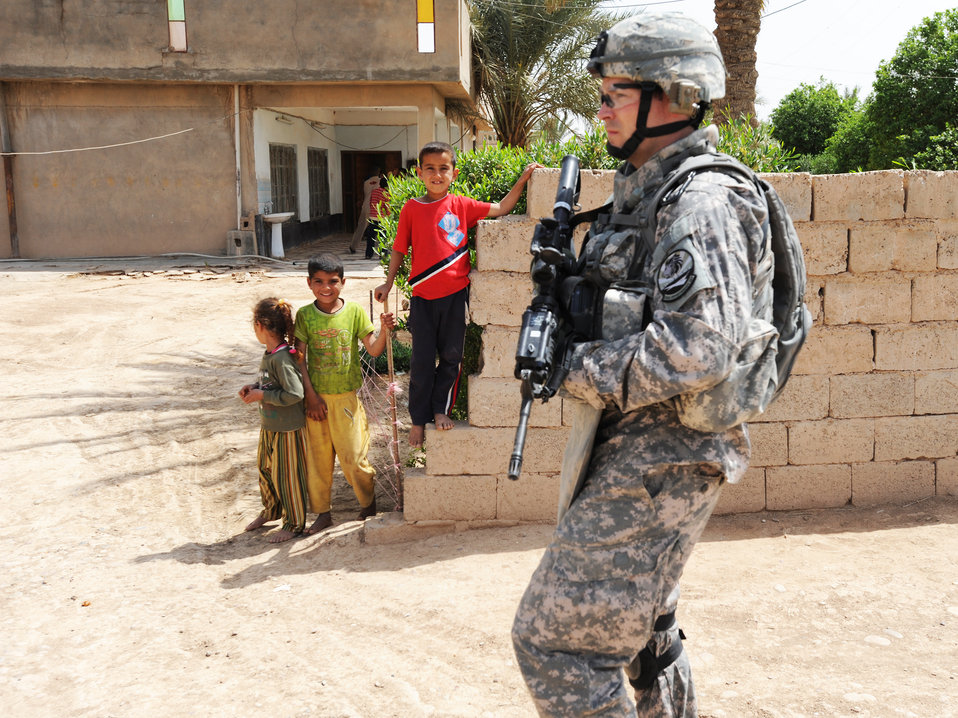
Joint Base Balad security forces Airmen patrol Iraq villages

Capt. Steve Ohlmeyer walks down a street April 9 in the village of Albu Hishma. He is assigned to the 532nd Expeditionary Security Forces Squadron as the quick reaction force officer in charge.